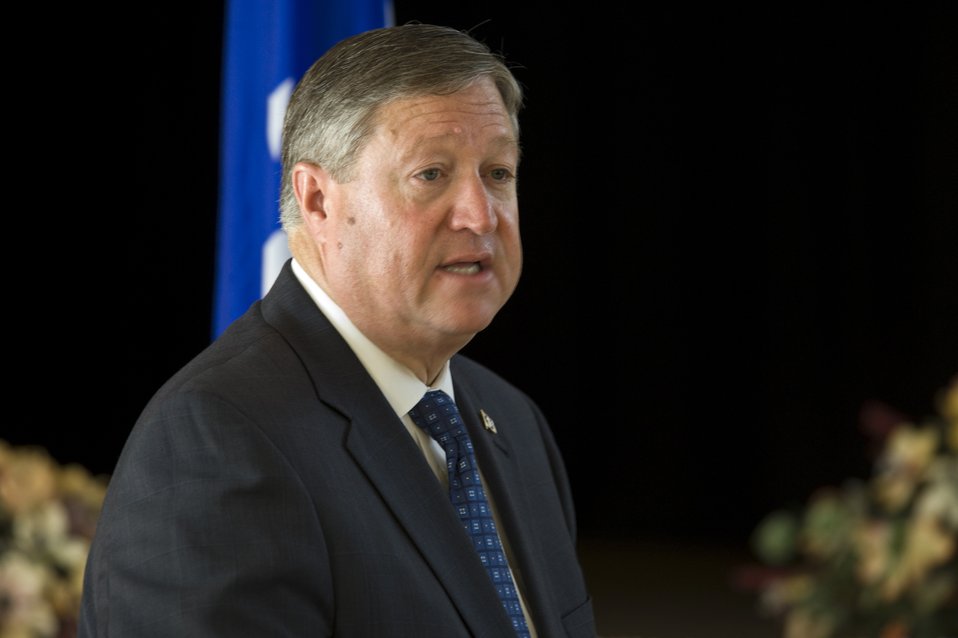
SecAF greets Airmen 7

Secretary of the Air Force Michael Donley addresses Airmen and their spouses during an